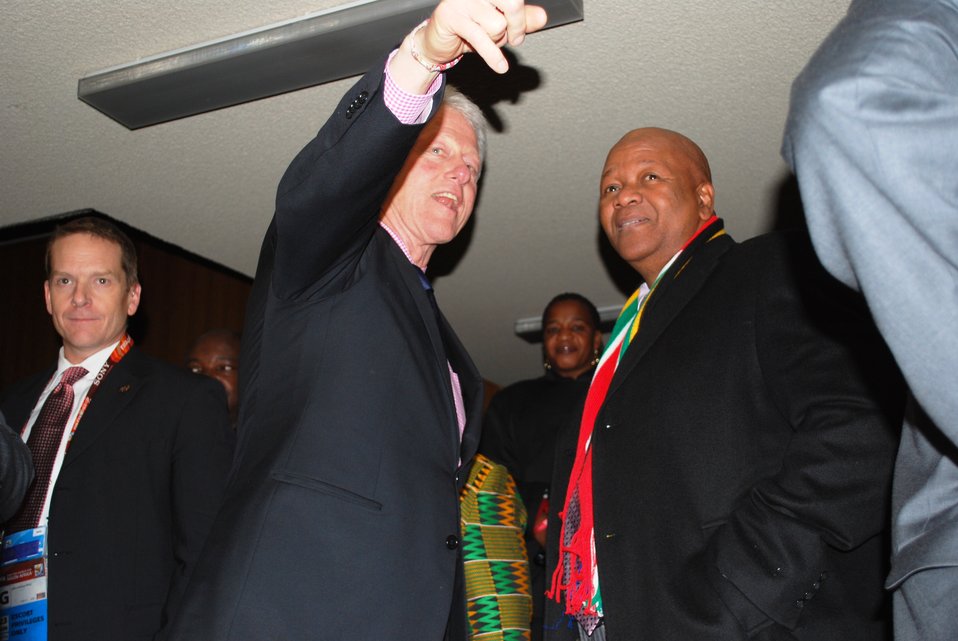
Former Pres. Bill Clinton Speaks With South African Minister of Justice Radebe

Former President Bill Clinton and South African Minister of Justice Jeff Radebe speak at the U.S. vs. Algeria World Cup soccer match at Loftus Versfeld Stadium in Pretoria, South Africa, on June 23, 2010.